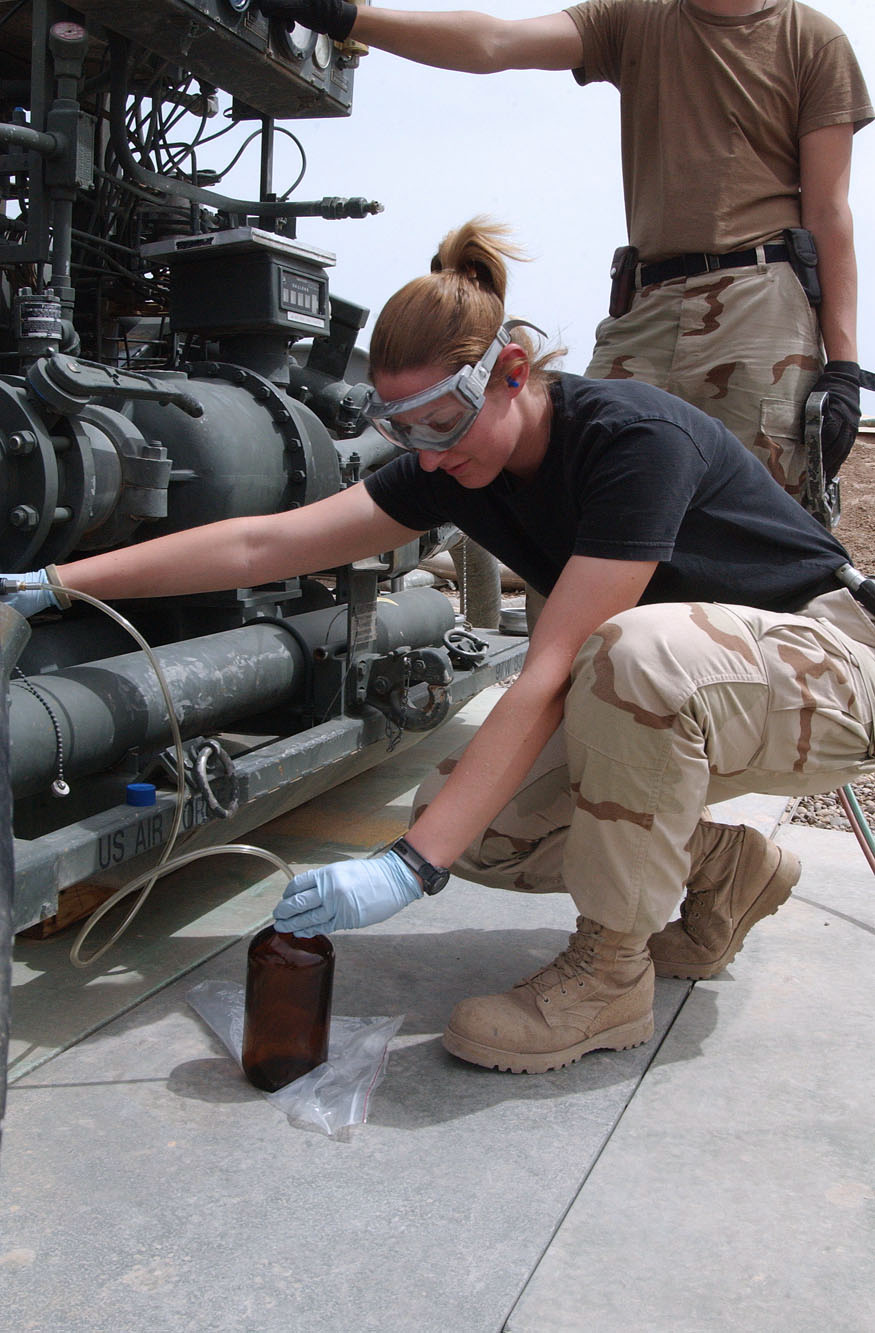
Fuels Airmen cultivate Balad farm

BALAD AIR BASE, Iraq -- Senior Airman Amy Finkelbeiner performs a quality analysis on a fuel stand here. Airmen of the 332nd Expeditionary Logistics Readiness Squadron's fuels management flight monitor and sample fuel to ensure it is suitable for aircraft use. Airman Finkelbeiner is a fuels laboratory technician and is deployed from Davis-Monthan Air Force Base, Ariz.